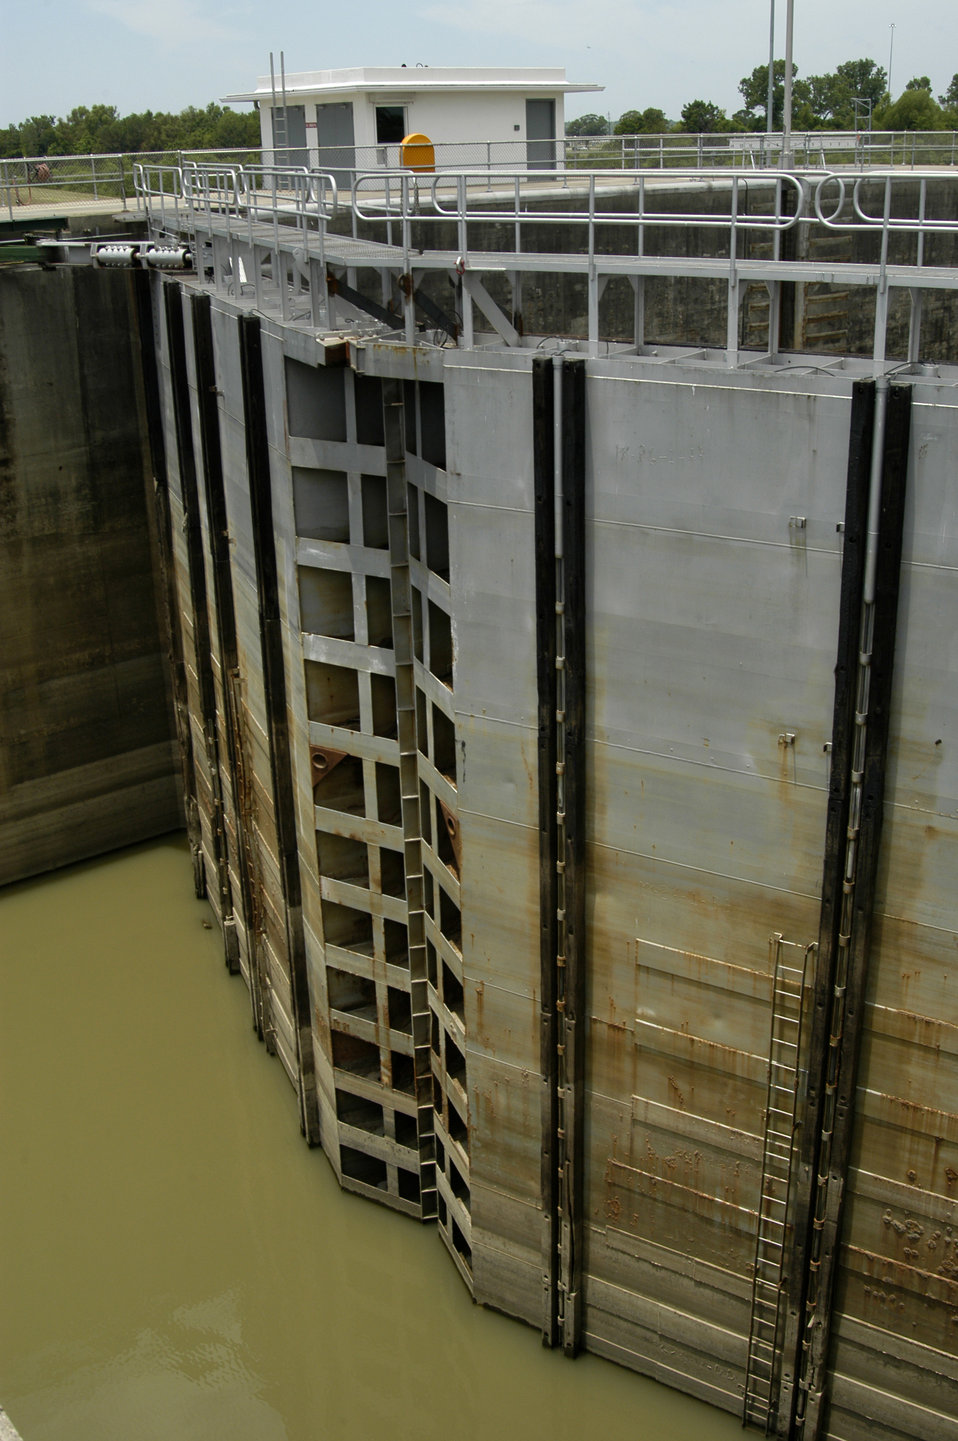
Steel miter gates close off both ends of the lock chamber at the Port Allen Lock when a vessel is passing to and from the Mississippi River via the Gulf Intracoastal Waterway Alternate Route. The Port Allen Lock is located on the west bank of the Mississippi River south of the town of Port Allen, LA and opposite the lower limit of the Port of Baton Rouge.